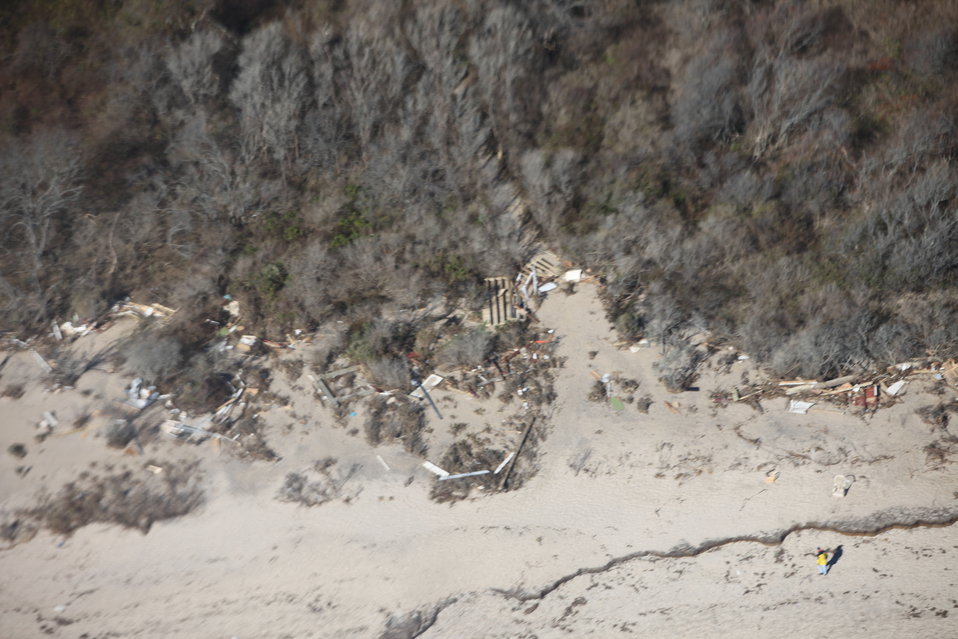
Debris on Moonstone Beach (RI)

Debris on Moonstone Beach at Trustom Pond National Wildlife Refuge deposited by storm Sandy.